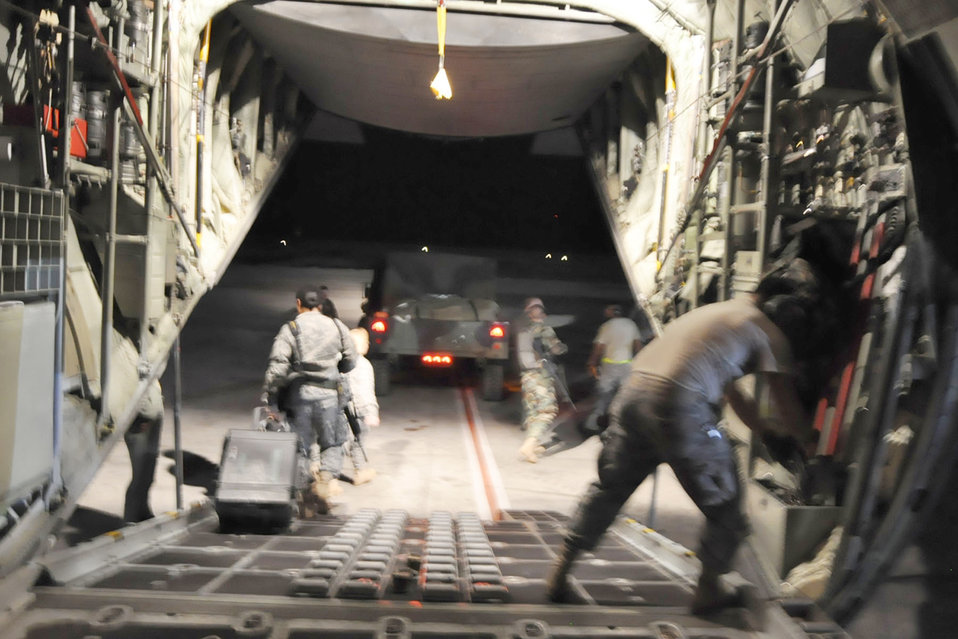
Medical mission to Haiti

The last member of a group of 19 U.S. military medical people leaves the C-130H Hercules at Toussaint L'Ouverture International Airport in Port-au-Prince, Haiti, Jan. 18, 2010. The medical group, consisting of U.S. Army and Air Force servicemembers from Soto Cano Air Base, Honduras, was flown here by the Air Force Reserve Command's 910th Airlift Wing.